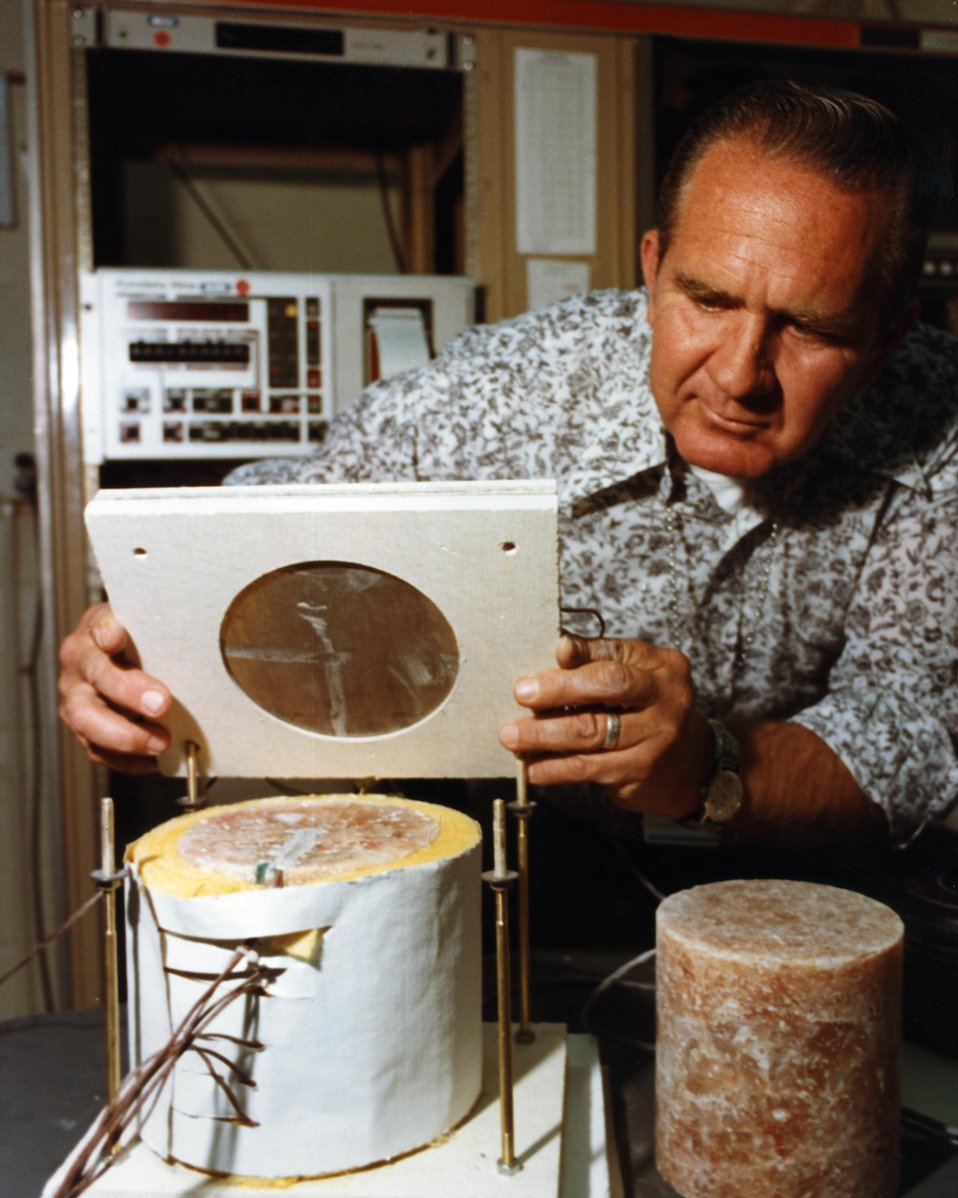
RADIATION TESTING OF SALT.

SANDIA NATIONAL LAB'S ENGINEER CLIFF KINABREW PREPARES A PIECE OF SALT (IT'S WRAPPED WITH INSULATING MATERIALS) FROM SOUTHEASTERN NEW MEXICO FOR AN EXPERIMENT AIMED AT DEVELOP- ING INSTRUMENTS TO ACCURATELY MEASURE HOW THE RADIATION IN A CONTAINER OF NUCLEAR WASTE COULD AFFECT NEARBY SALT. KINA BREW'S TEST SERIES, UNDERWAY IN ALBUQUERQUE, IS PART OF A LARGE SANDIA PROGRAM TO DETERMINE THE SUITABILITY OF DEEP- BEDDED SALT AS THE LOCATION FOR DOE'S PROPOSED WASTE ISOLATION PILOT PLANT.